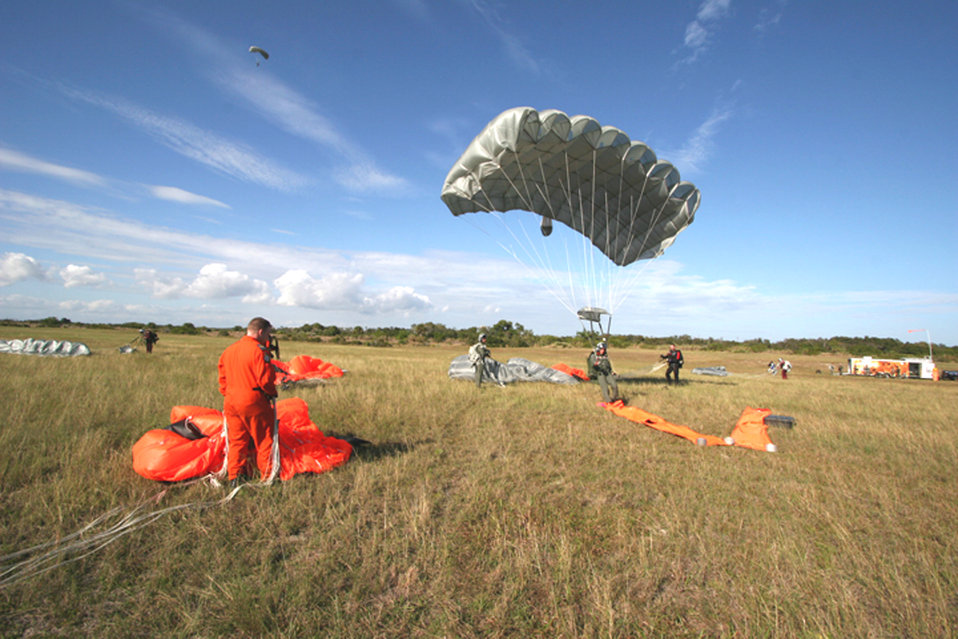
Joint jump

American and Canadian pararescue jumpers recover their equipment as part of an international search and rescue exercise Jan. 5 at Cape Canaveral Air Station, Fla. Air Force Reserve Command PJs from the 920th Rescue Wing at Patrick Air Force Base, Fla., participated with Canadian rescue forces from the 435th Air Transport and Rescue Squadron based in Winnipeg, Manitoba.